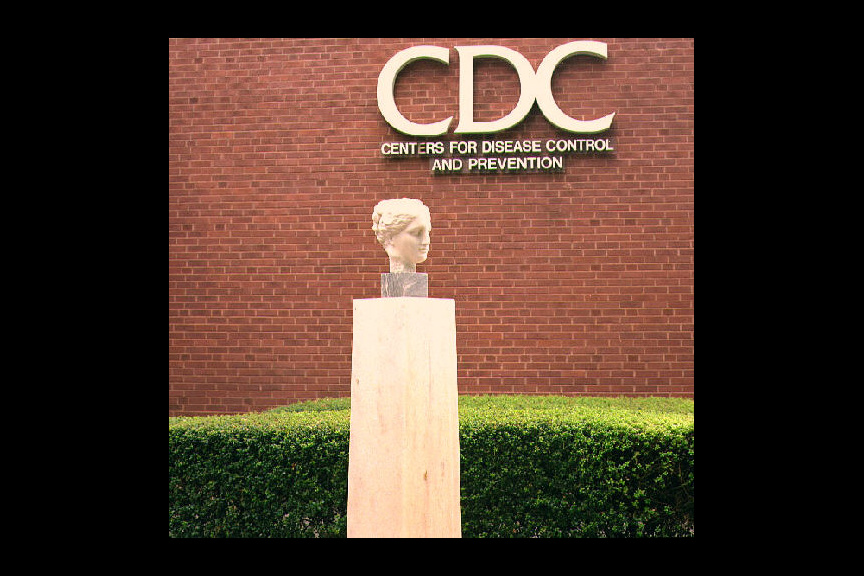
Bust of Hygeia in front of the former Building 1 on the Centers for Disease Control's (CDC) Roybal Campus in Atlanta, Georgia.